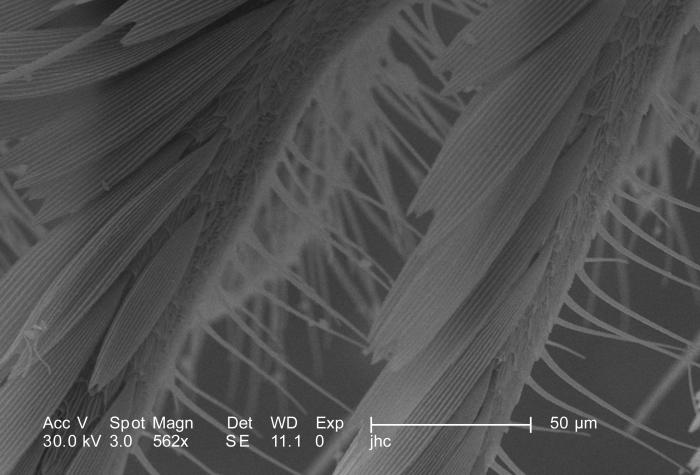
Under a moderately high magnification of 562X, this scanning electron micrograph (SEM) revealed some of the ultrastructural exoskeletal morphology displayed by an unidentified white moth, which had been found deceased on the ground in the suburbs of Decatur, Georgia. In this particular view, what appears to be 'hairs', was actually a number of exoskeletal sensorial structures known as 'setae', located atop the insect's head. You'll also note the rows of 'scales' buried amongst the setae. Both the scales and setae are composed of the same chitinous material.